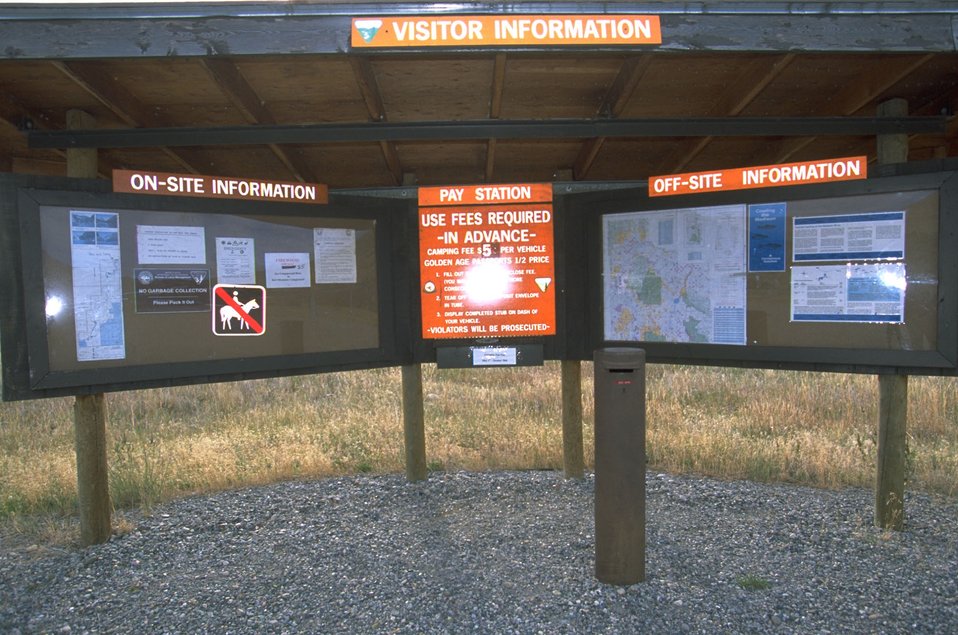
Visitor Information Kiosk at Red Mountain